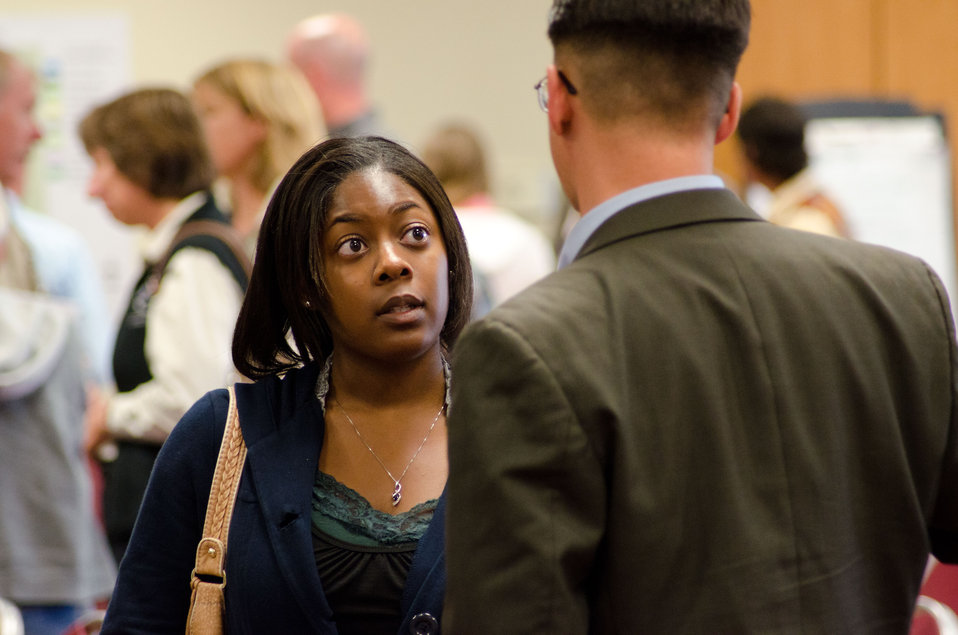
Participants at the America’s Great Outdoors Initiative (AGO) Monterey Bay Pilot Area Focus Session concluded in the City of Watsonville’s Civic Plaza in California, on Friday, June 17, 2011. Federal and state resource management agencies came together to identify partnership opportunities and determine actions for protection and enhancement of water quality and publicize voluntary stewardship in the watersheds that drain into the Monterey Bay National Marine Sanctuary. This area includes the counties of San Mateo, Santa Cruz, Santa Clara, San Benito, Monterey, and San Luis Obispo. Key questions identified existing multi-county or multi land use partnerships; what is not being done; possible partnerships - collective resources to maximize the benefits to natural resources and communities; and additional resources that organizations can bring to maximize AGO. President Barack Obama signed the initiative on April 16, 2010 to develop a 21st Century conservation and recreation agenda.